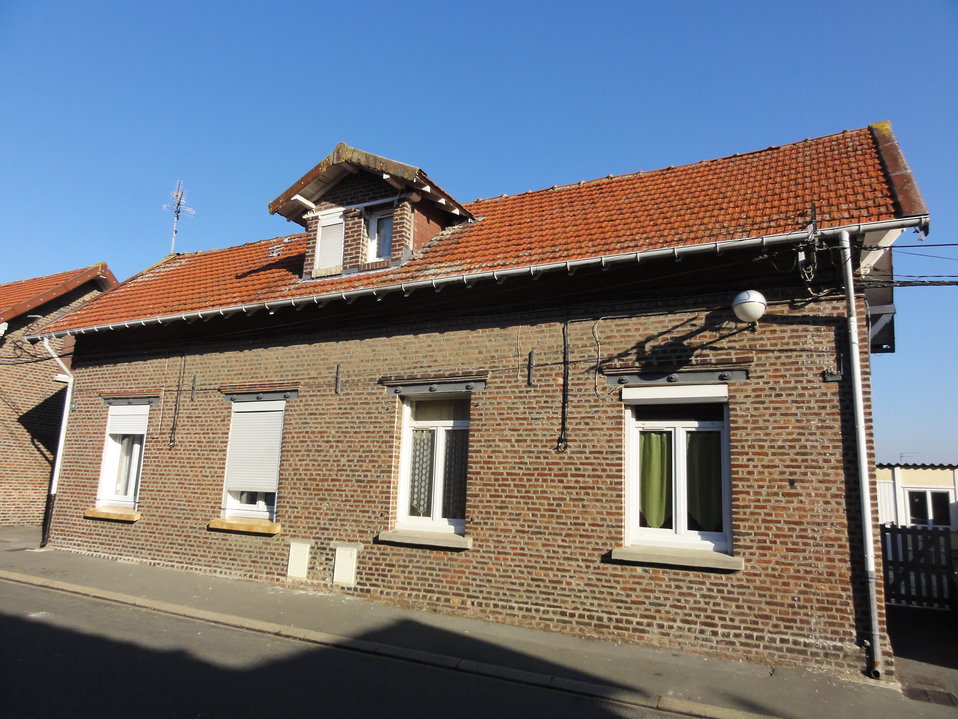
Fran√ßais†: Cit√©s de la Fosse n¬∞ 6 bis - 6 ter de la Compagnie des mines de Marles, Calonne-Ricouart, Pas-de-Calais, Nord-Pas-de-Calais, France.